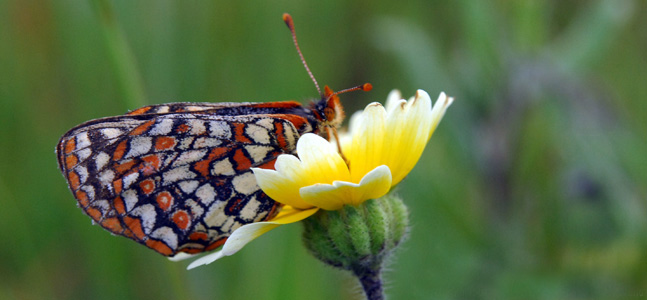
Bay Checkerspot Butterly